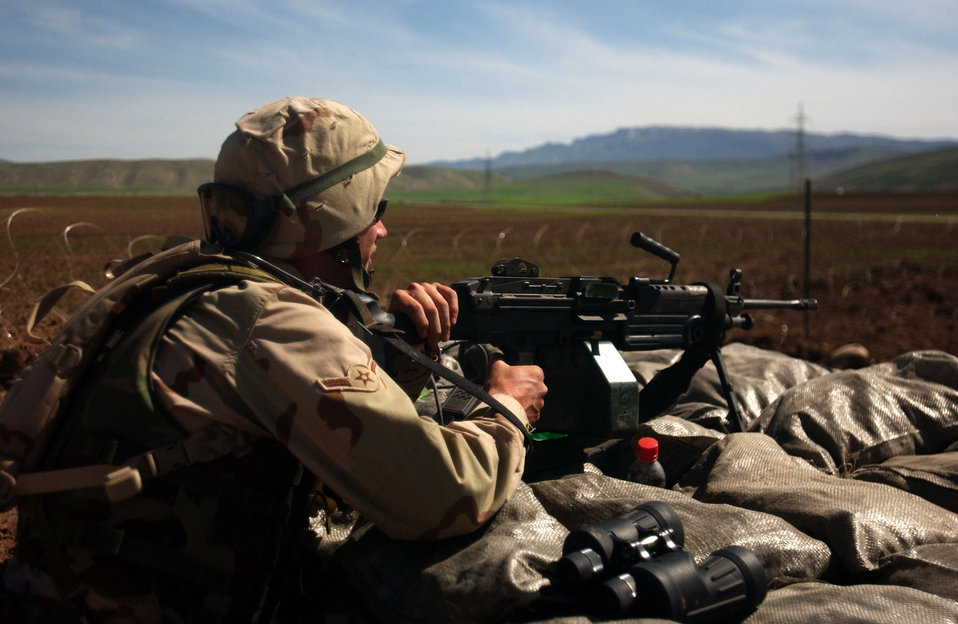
Sentry duty

OPERATION IRAQI FREEDOM -- Airman Stephen Blevins, a security forces journeyman assigned to the 86th Contingency Response Group, performs sentry duty at Bashur Airfield in Kurdish controlled northern Iraq in support of Operation Iraqi Freedom on April 12.